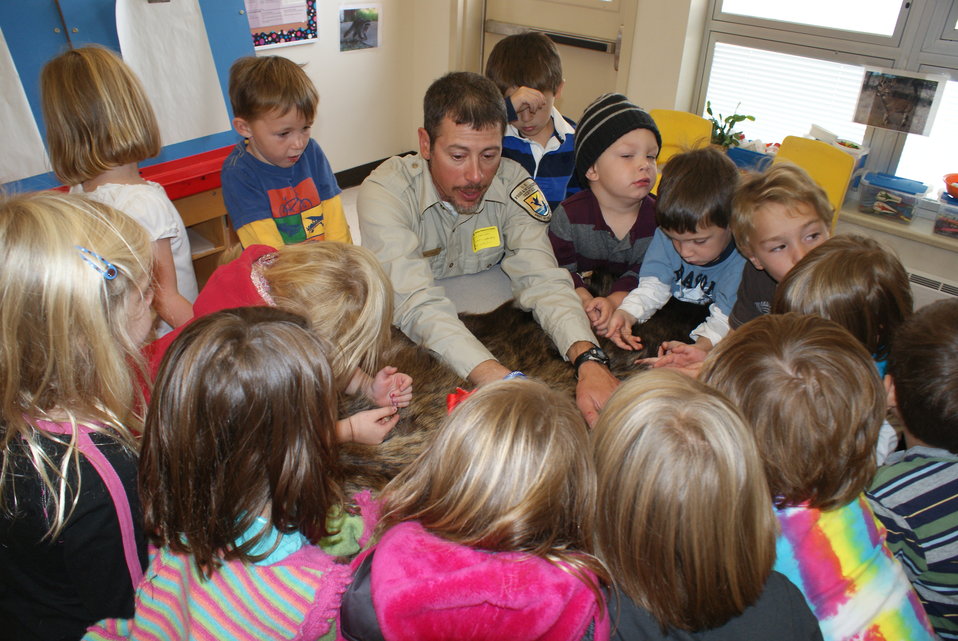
Scientists in the Community Program

U.S. Fish and Wildlife Service Mountain-Prairie Region Deputy ARD for External Affairs, Matt Kales, introduces early childhood education students at William Roberts Elementary School in Denver to some of Colorado's native and historic wildlife species.